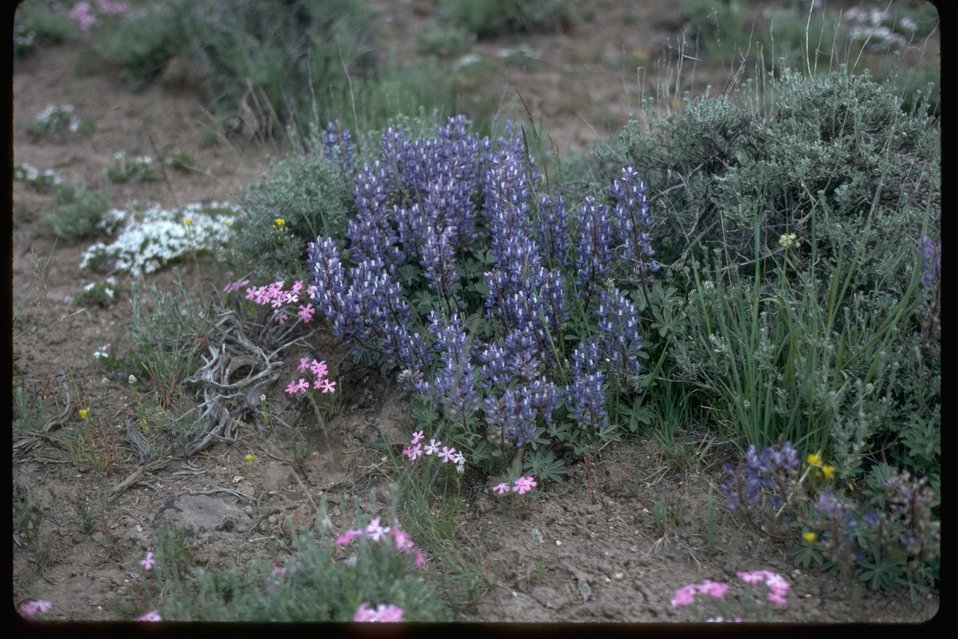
Lupine.